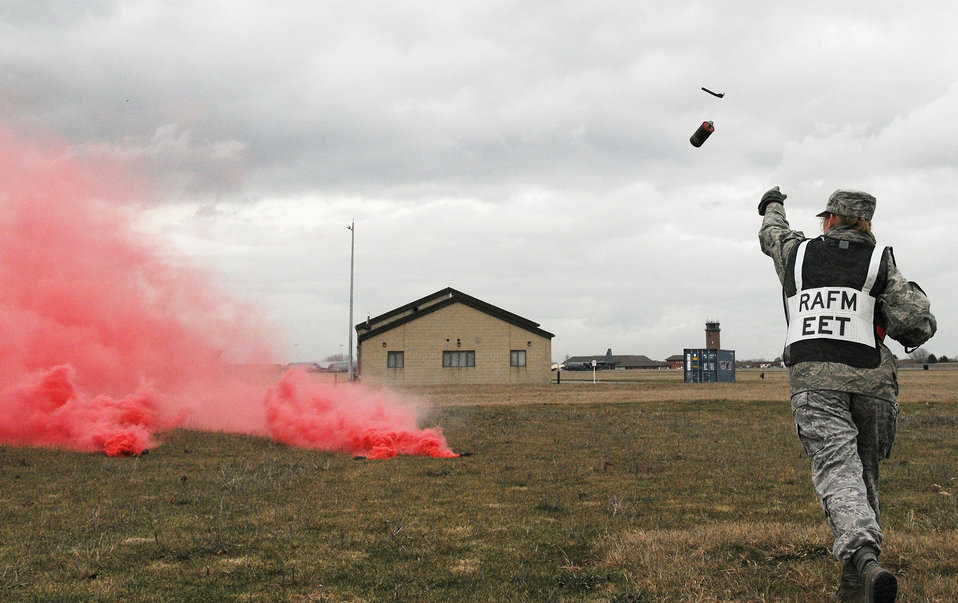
One more to go

Master Sgt. Ani Stubbs throws red smoke hand grenades during a